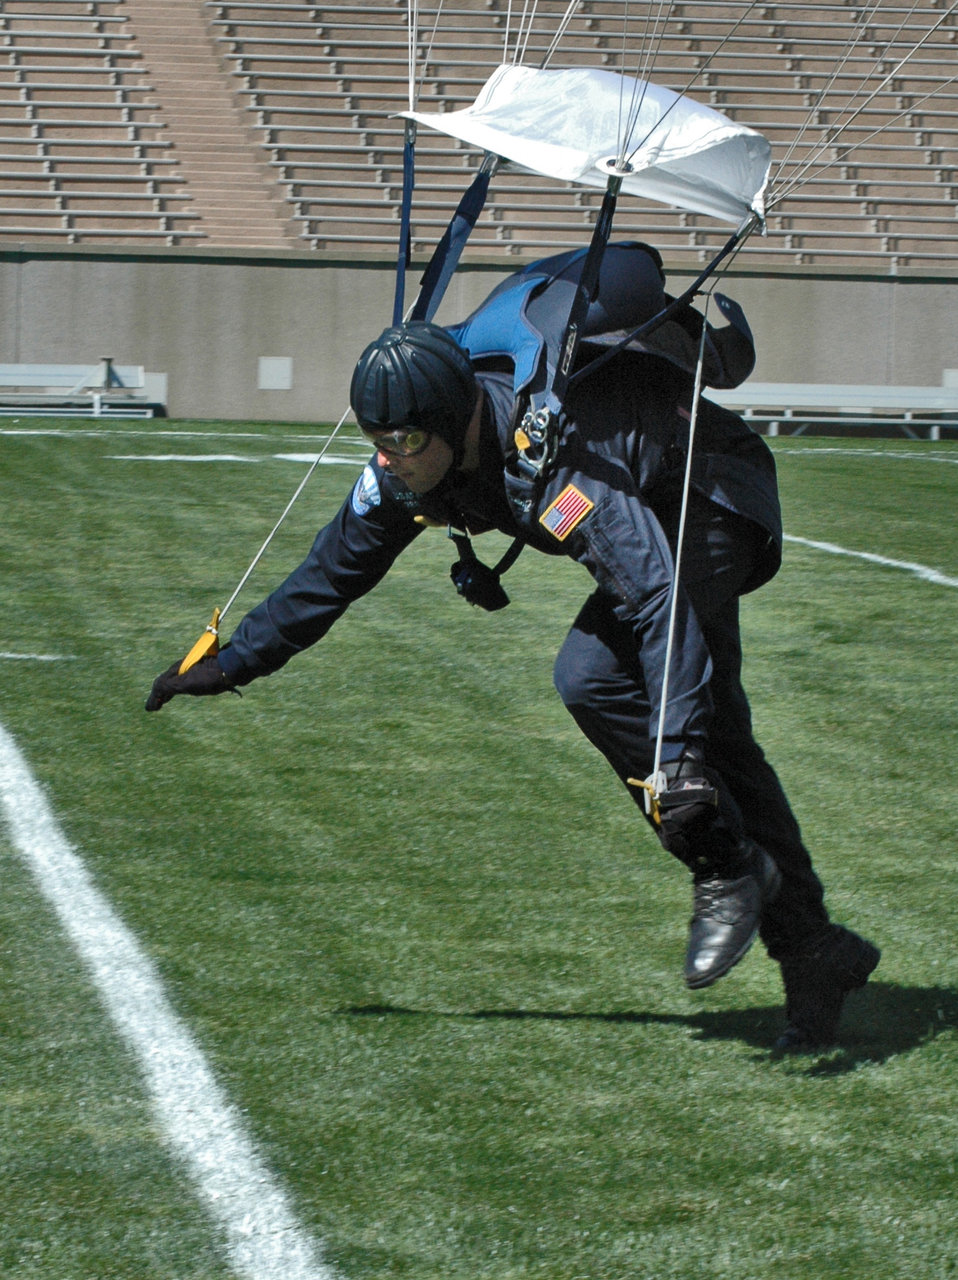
Wings of Blue

U.S. AIR FORCE ACADEMY, Colo. -- Cadet 2nd Class Logan Brewer hits the brakes to maintain his balance after landing during a